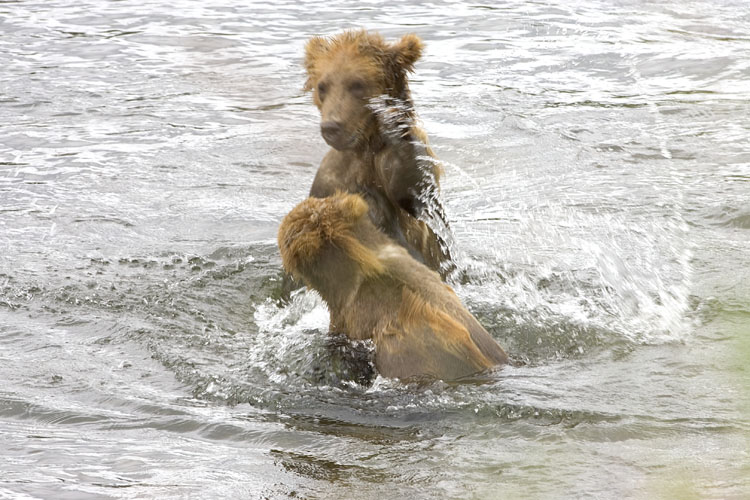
Wildlife of Kodiak Refuge

Playful Kodiak Bears